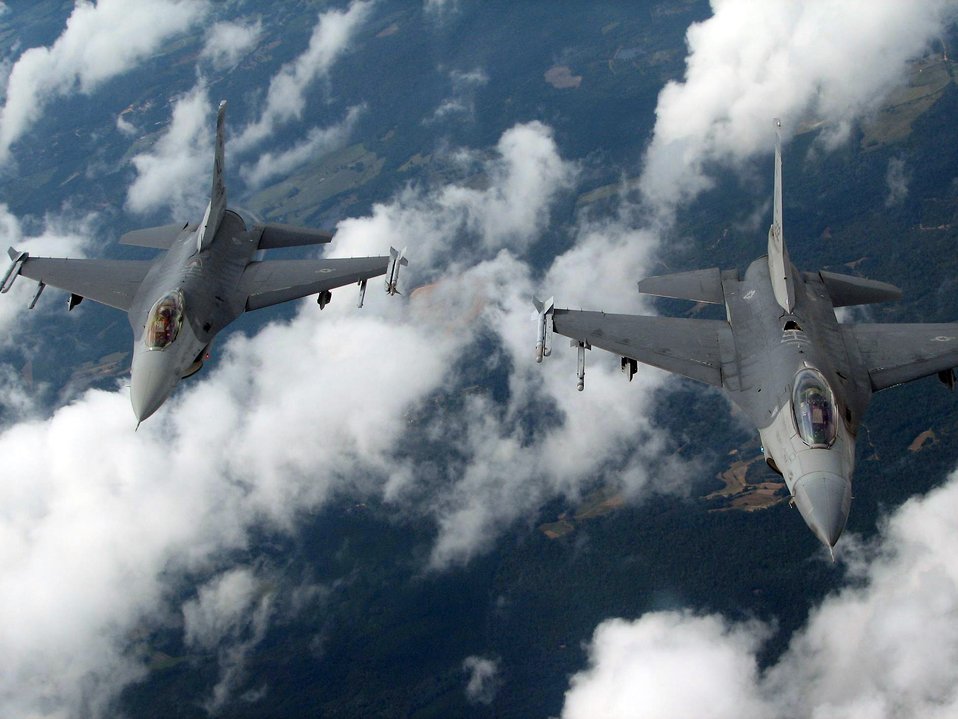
Military appreciation

AUBURN, Ala. -- Two F-16 Fighting Falcons flown by Capts. Tom Isenberg and Mike McGinn fly in formation here Sept. 24 on their way to perform a fly-over over at Auburn University's homecoming football in celebration of military appreciation day and the Air Force anniversary. Captains Isenberg and McGinn are from the Alabama Air National Guard's 187th Fighter Wing in Montgomery, Ala.